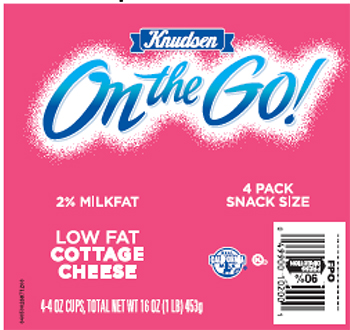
RECALLED – Cottage Cheese products

May 17, 2014 – Product Recall – Kraft Foods Group Voluntarily Recalls Select Cottage Cheese Products Due to Out-of-Standard Storage Temperatures
Certain Knudsen Cottage Cheese, Breakstone’s Cottage Cheese, Simply Kraft Cottage Cheese and Daily Chef Cottage Cheese Products Included in the Recall
.